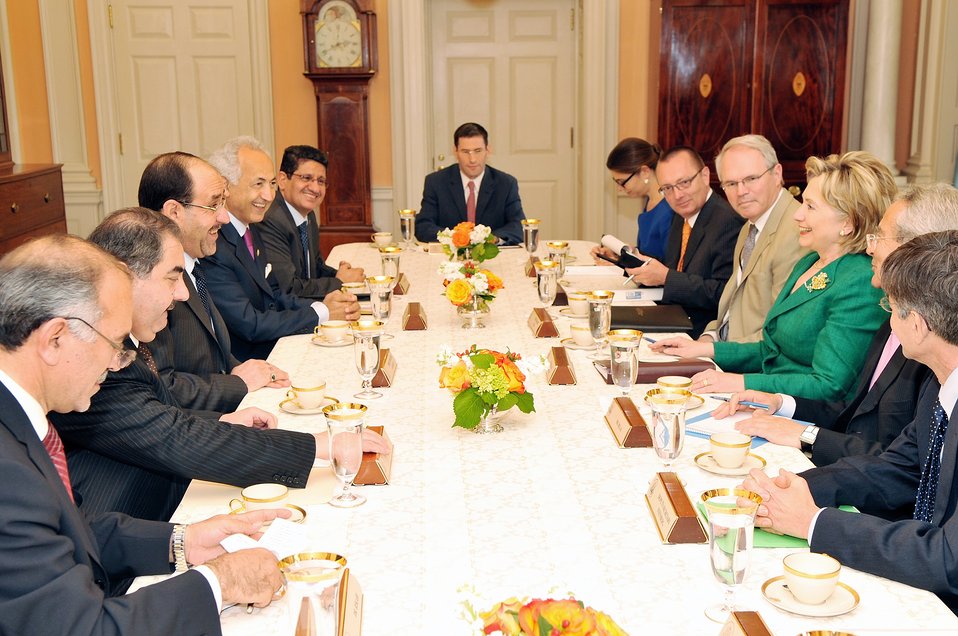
U.S.-Iraq High Coordinating Committee Meeting

U.S. Secretary of State Hillary Rodham Clinton holds U.S.-Iraq High Coordinating Committee Meeting with His Excellency Nouri al-Maliki, Prime Minister of the Republic of Iraq at the U.S. Department of State in Washington, DC July 24, 2009.